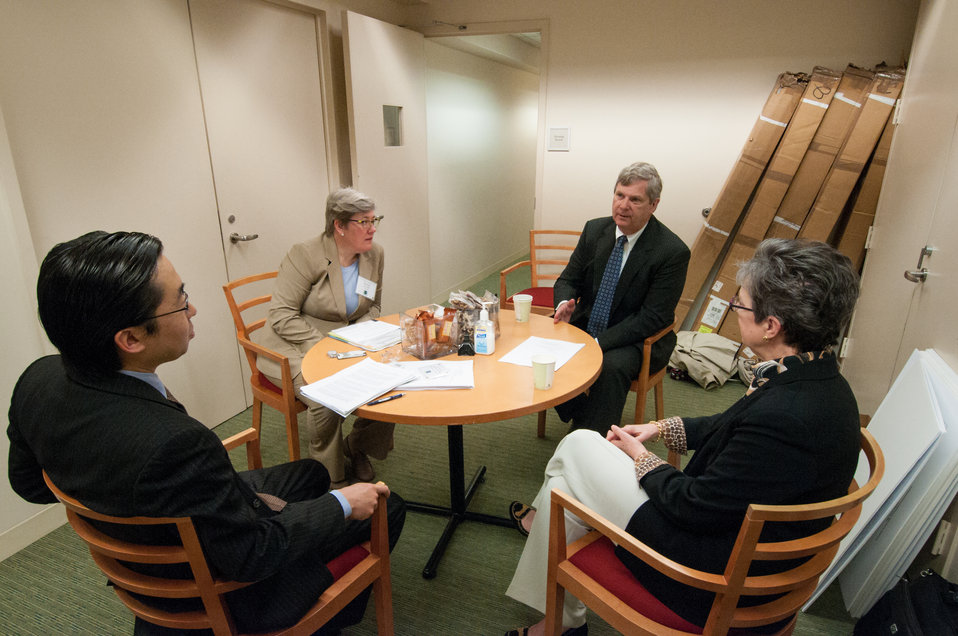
(L to R) White House, Chief Technology Officer Todd Park, World Bank Vice President Dr. Rachel Kyte, Agriculture Secretary Tom Vilsack and Agriculture Under Secretary for Research, Education, and Economics (REE) Dr. Catherine Woteki discuss topics prior to the opening session of the G-8 International Conference on Open Data for Agriculture in Washington, D.C. on Monday, Apr. 29, 2013. The conference launched a new 'virtual community' as part of a suite of actions, including the release of new data, that the U.S. is taking to give farmers and ranchers, scientists, policy makers and other members of the public easy access to publicly funded data to help increase food security and nutrition.